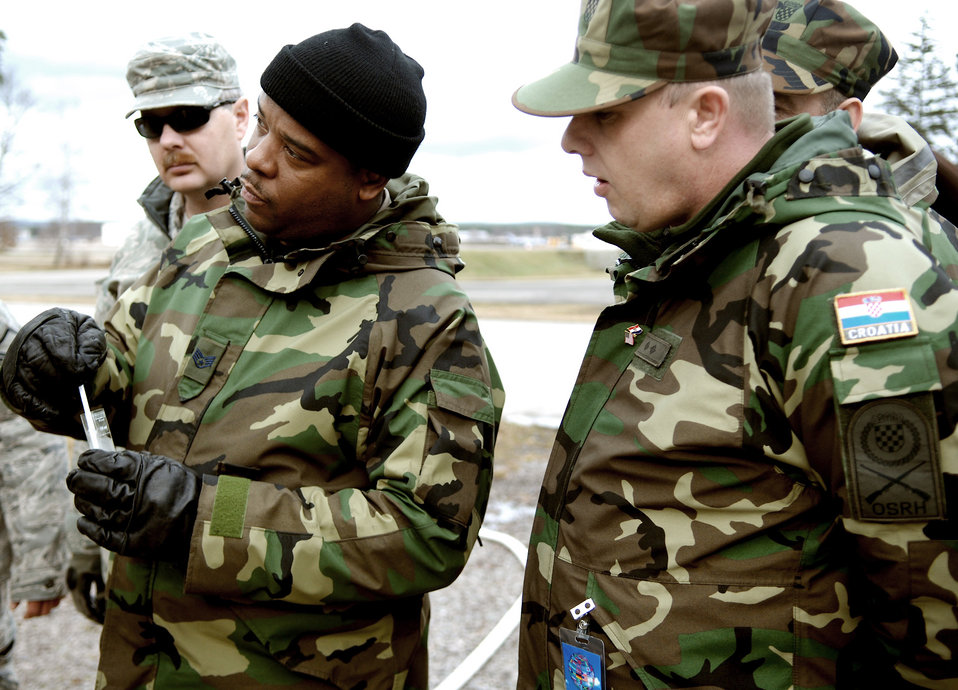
NATO partnerships

Staff Sgt. Maurice Wakins and Croatia army Private 1st Class Stanko Bosnjak test water they have just purified using a reverse osmosis water purification unit Feb. 24, 2010 at Ramstein Air Base, Germany. Sergeant Wakins is a 94th Civil Engineer Squadron technician from Dobbins Air Reserve Base, Ga.